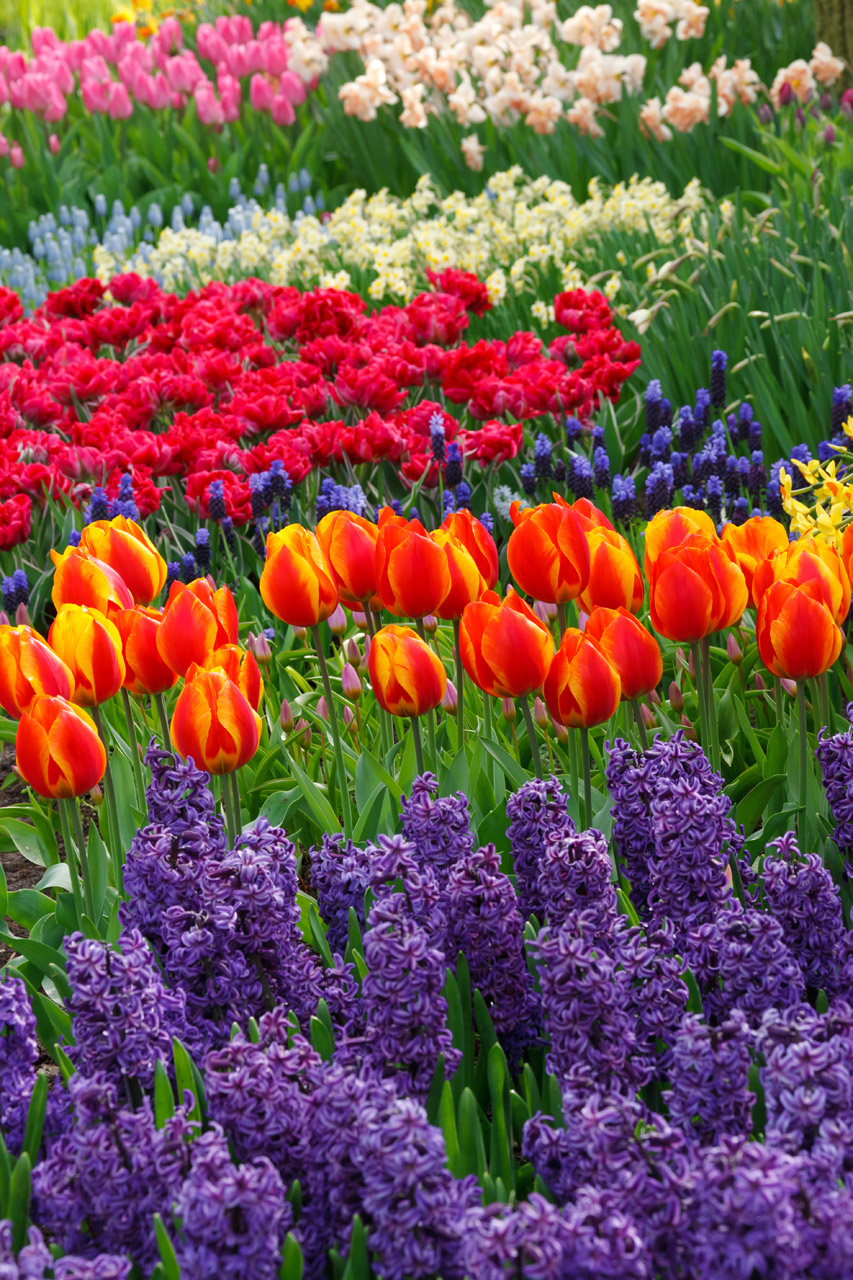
Beautiful flowers

Colorful flower beds in keukenhof gardens.